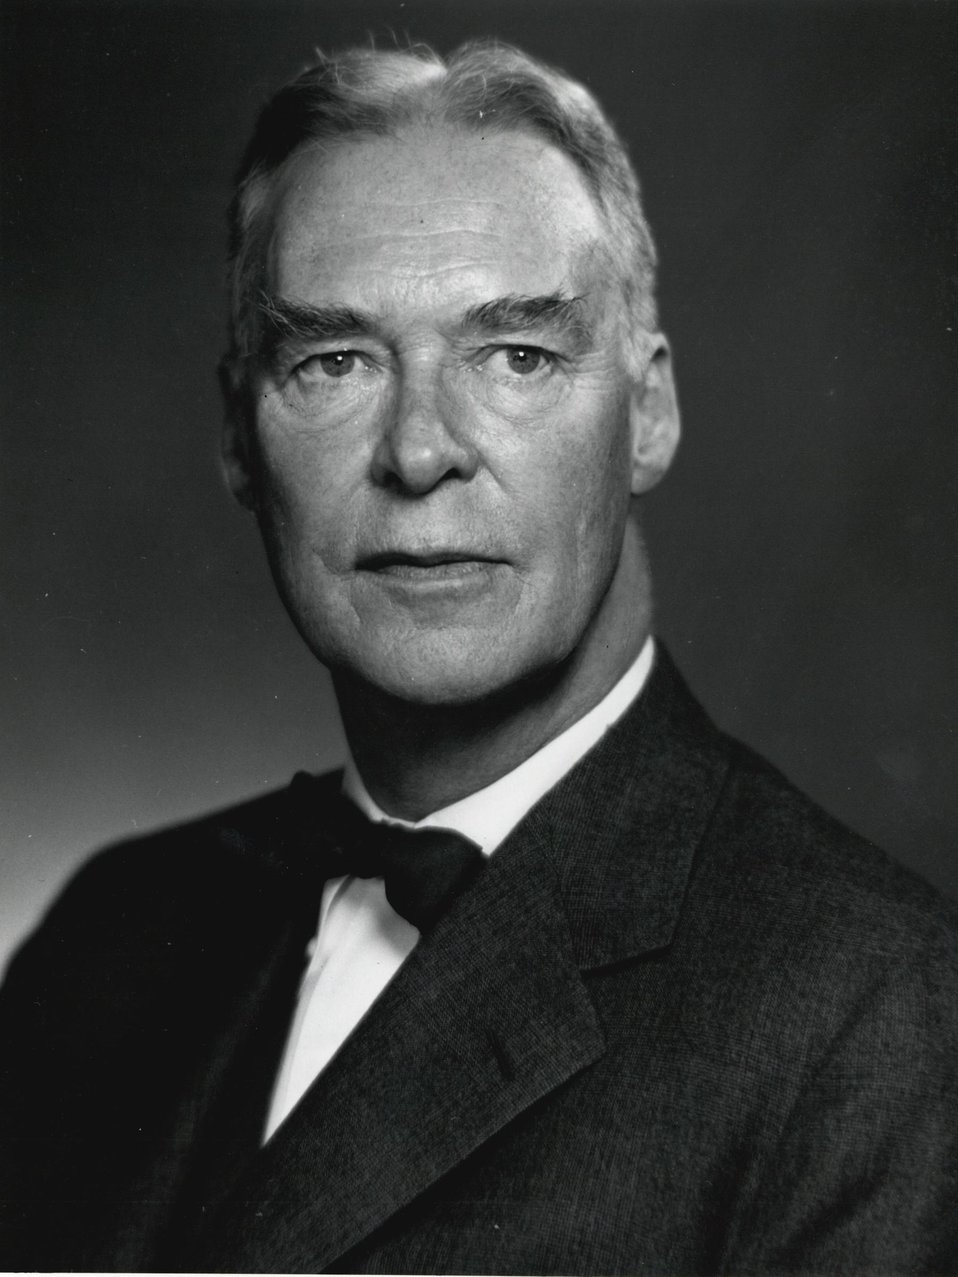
Christian A. Herter, U.S. Secretary of State, April 22, 1959 to January 20, 1961